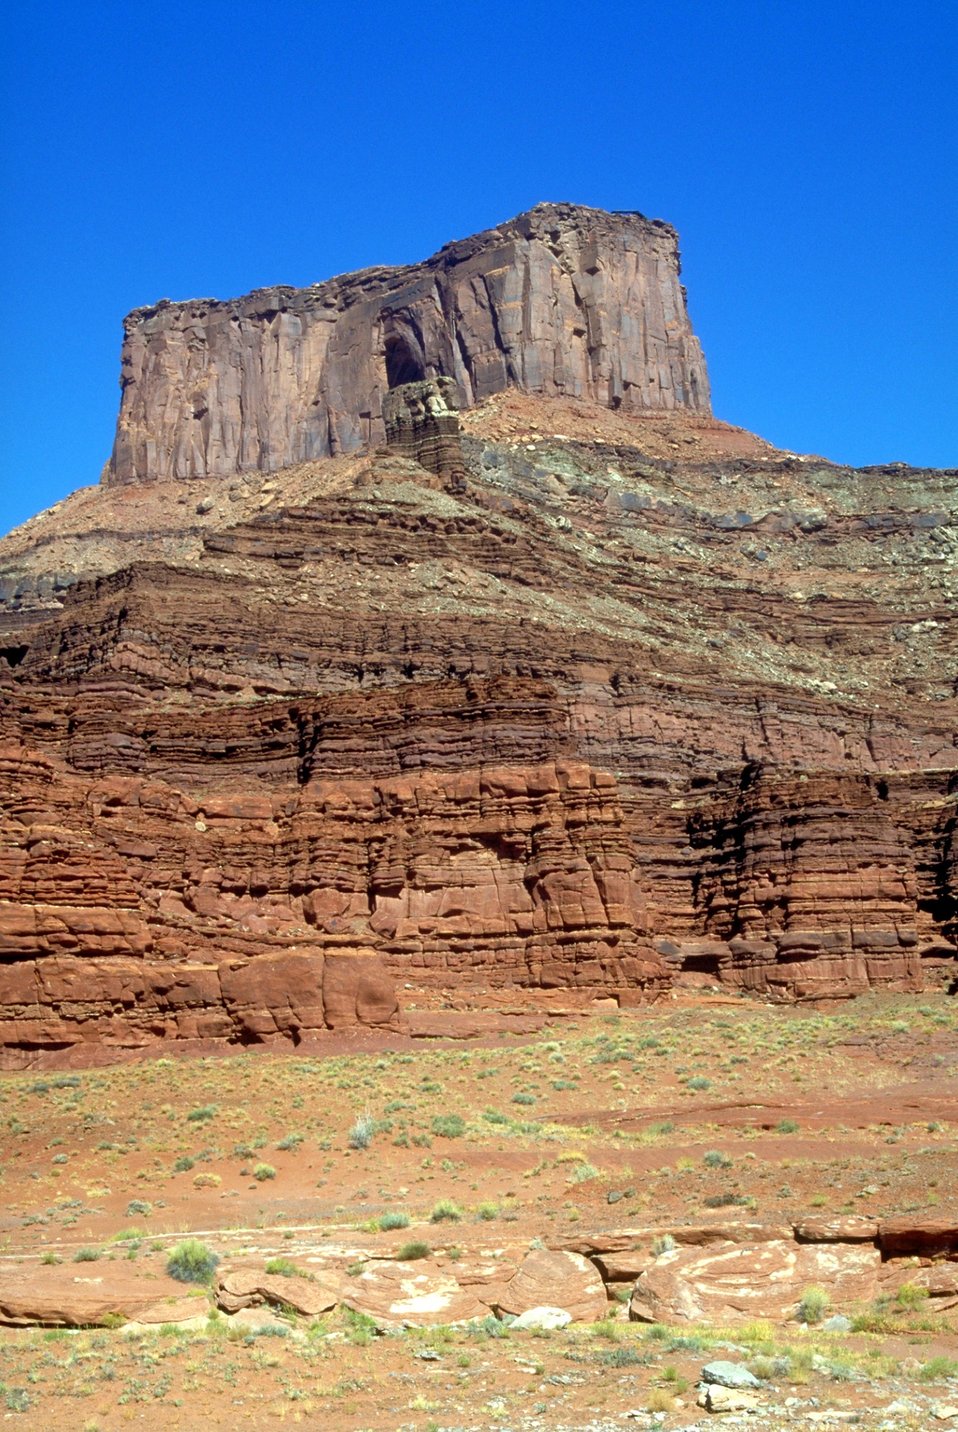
Deadhorse Point from the Shafer Trail.